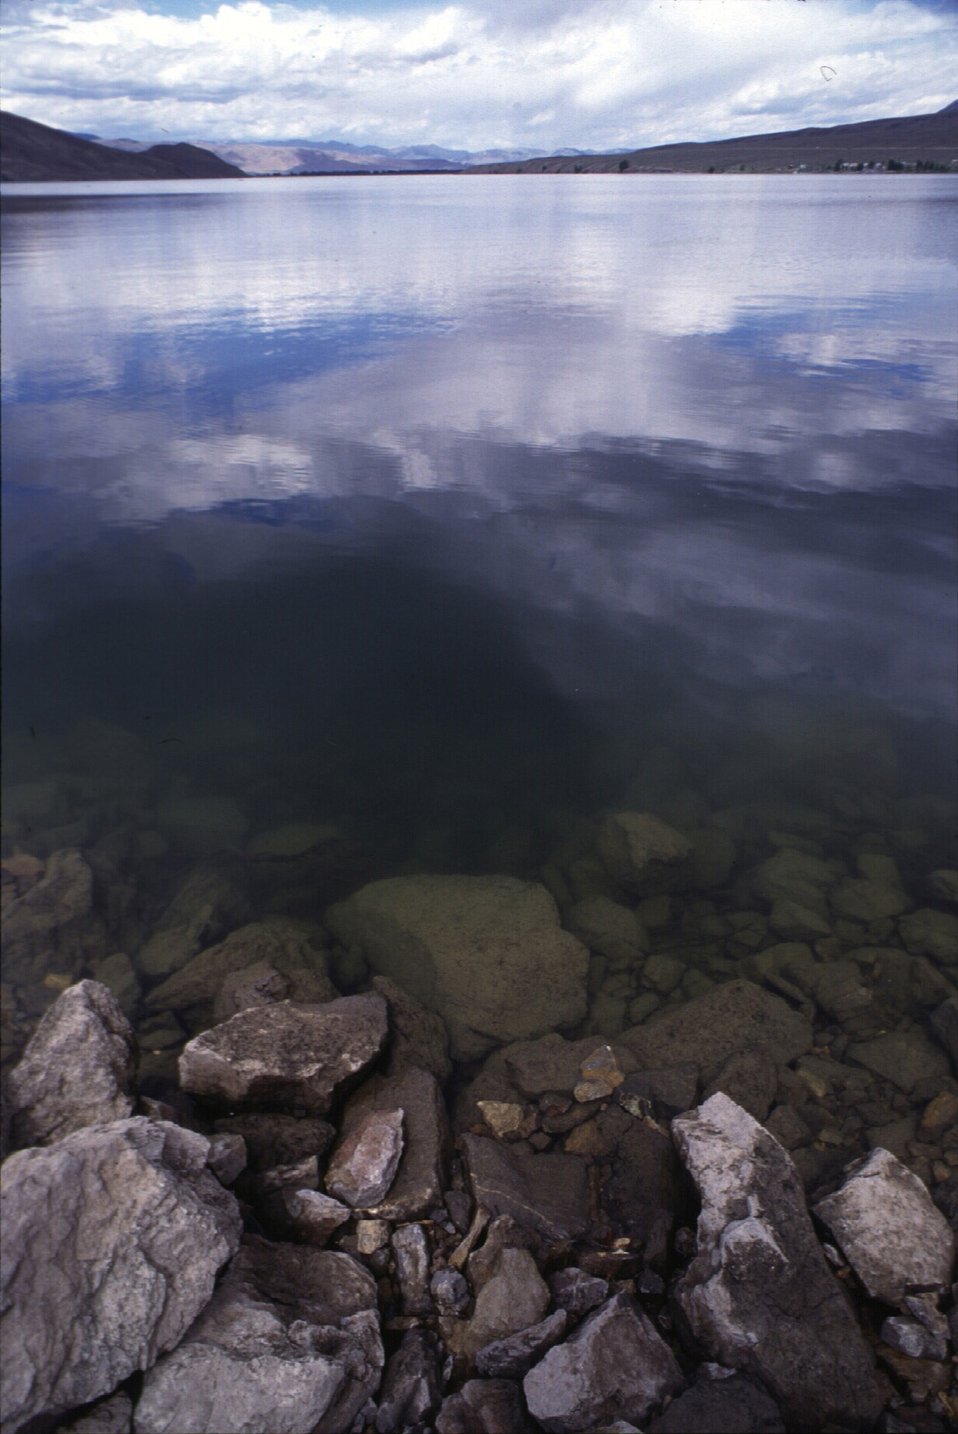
Scenic at Mackay Reservoir Challis Field Office UCSC Upper Columbia Salmon Clearwater District